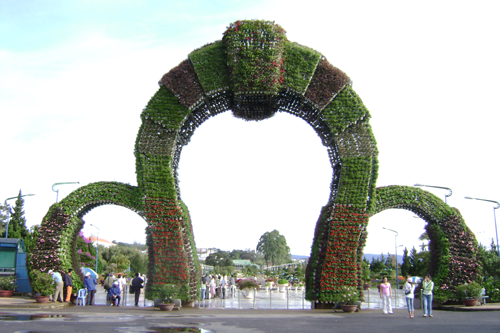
Tiếng Việt: == Gi?y phép ==